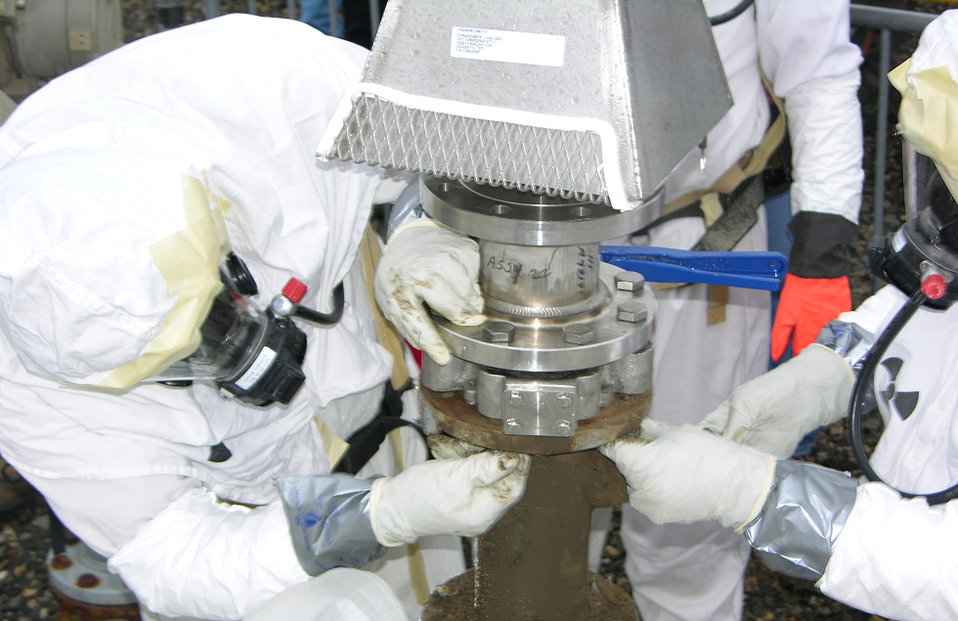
ORP Single-shell tank filters

Recovery Act workers install one of the first of 113 filters for Hanford’s single-shell tanks.